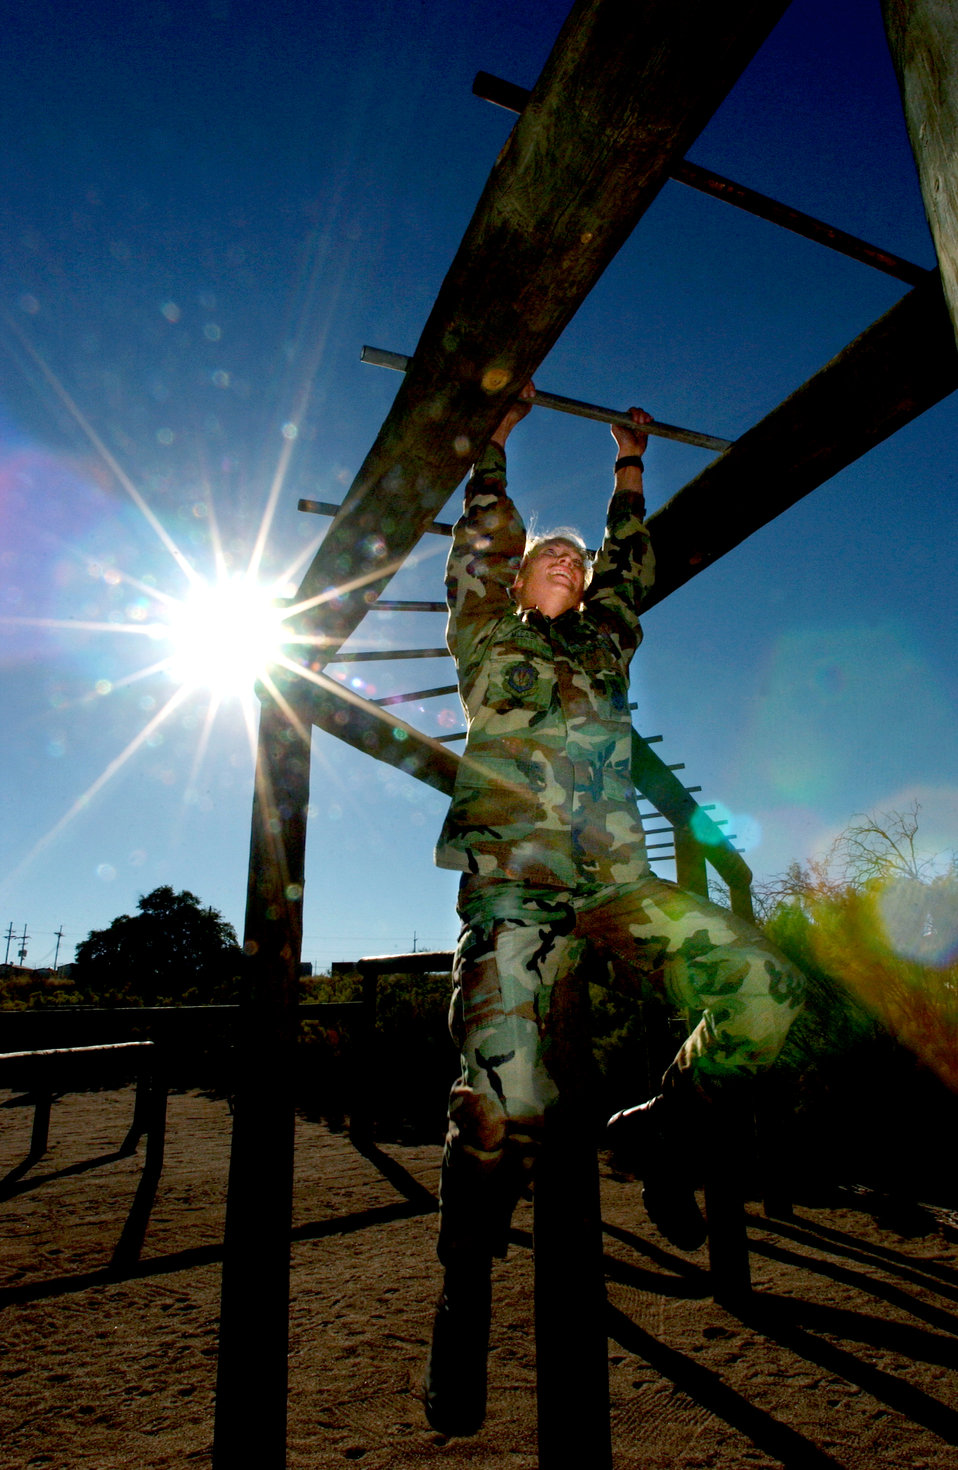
Tarzan

FORT HUACHUCA, Ariz. -- Staff Sergeant Sally McCabe swings hand to hand on the training obstacle named "Tarzan" Oct. 14. Airmen on the U.S. Air Forces in Europe Defender Challenge team are spending three weeks here preparing for the 2004 Defender Challenge competition. Defender Challenge, held at Lackland Air Force Base, Texas, is a security forces competition. Sergeant McCabe is assigned to the 85th Security Forces Squadron at Naval Air Station Keflavik, Iceland.